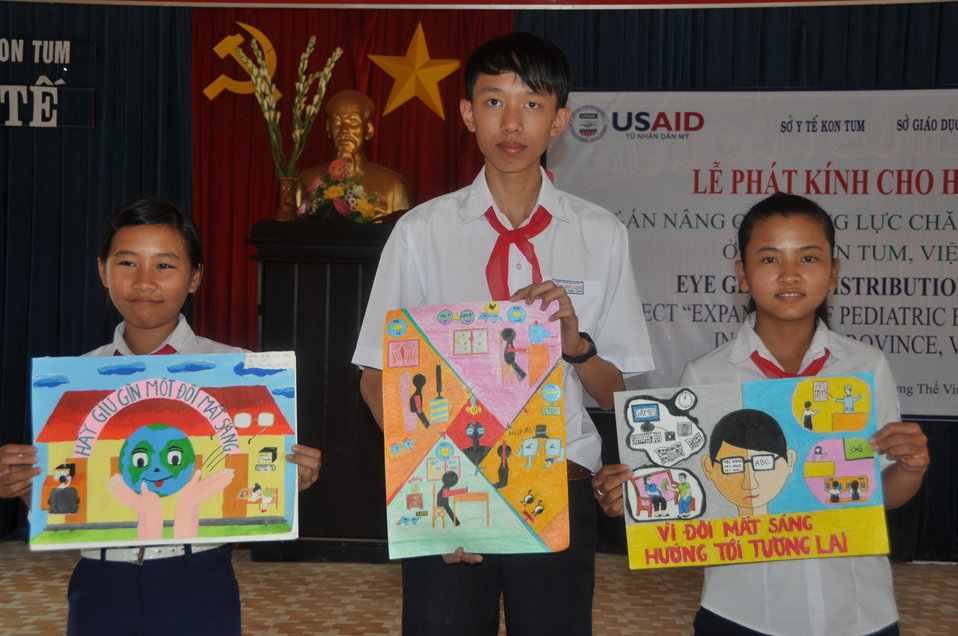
Students in Kon Tum create artwork about the importance of eye care